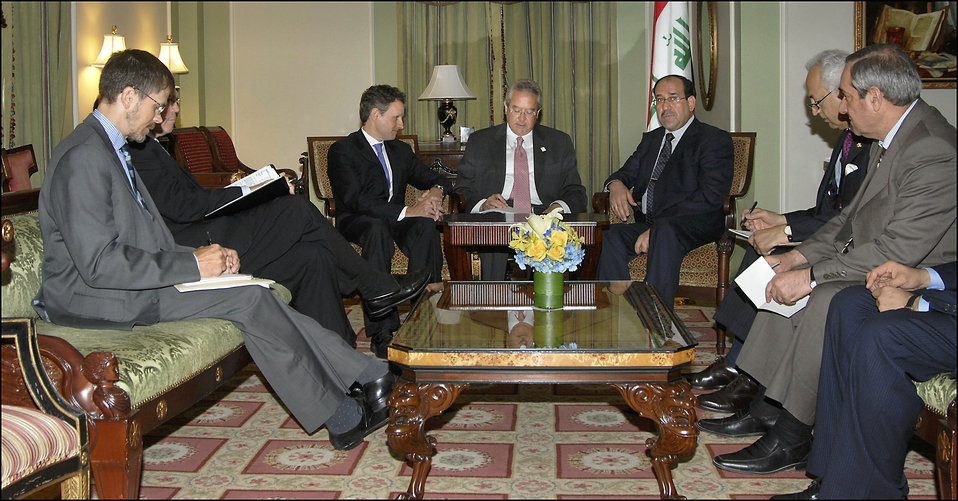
Iraqi Prime Minister Nouri al-Maliki

On July 23, 2009, Secretary Geithner met with Iraqi Prime Minister Nouri al-Maliki.